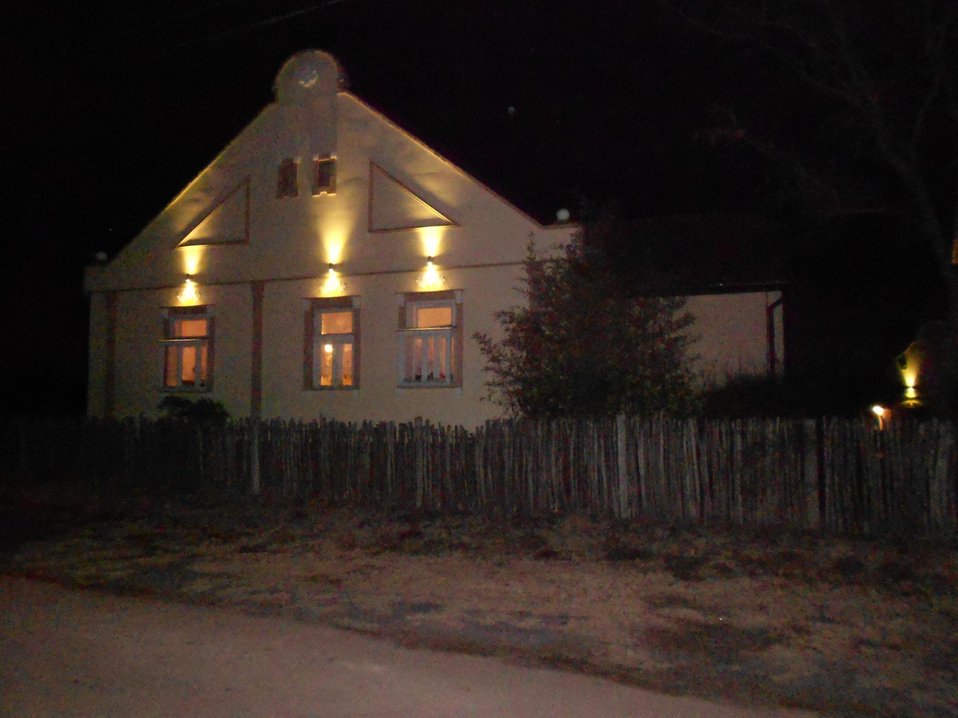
Српски / srpski: Драган Цветковић Мајкин салаш на Палићу ноћу, сопствена слика 2012